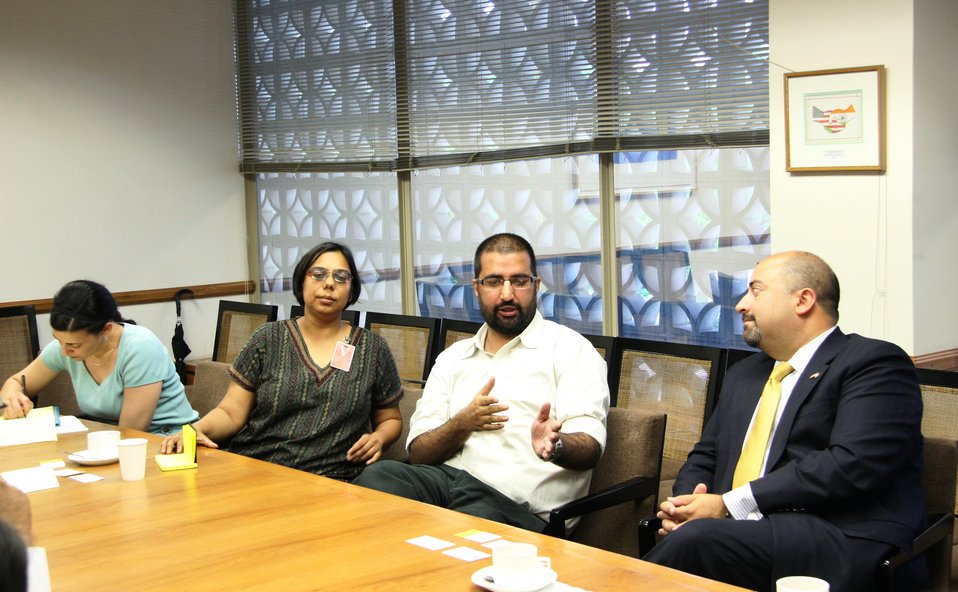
ADAS Keshap Participates in a Roundtable

U.S. Acting Deputy Assistant Secretary of State for South and Central Asian affairs participates in a roundtable with civil society leaders who combat trafficking in persons (TIP) across India at the U.S. Embassy New Delhi in India on July 21, 2010.